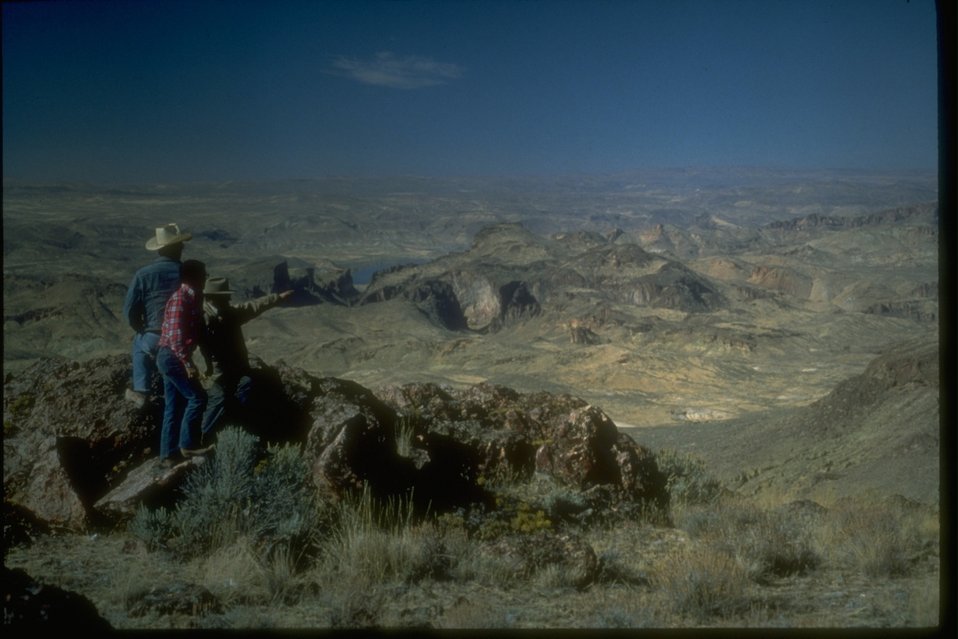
Sightseers lookout over the scenic overlook to a very hilly and rangeland valley floor.